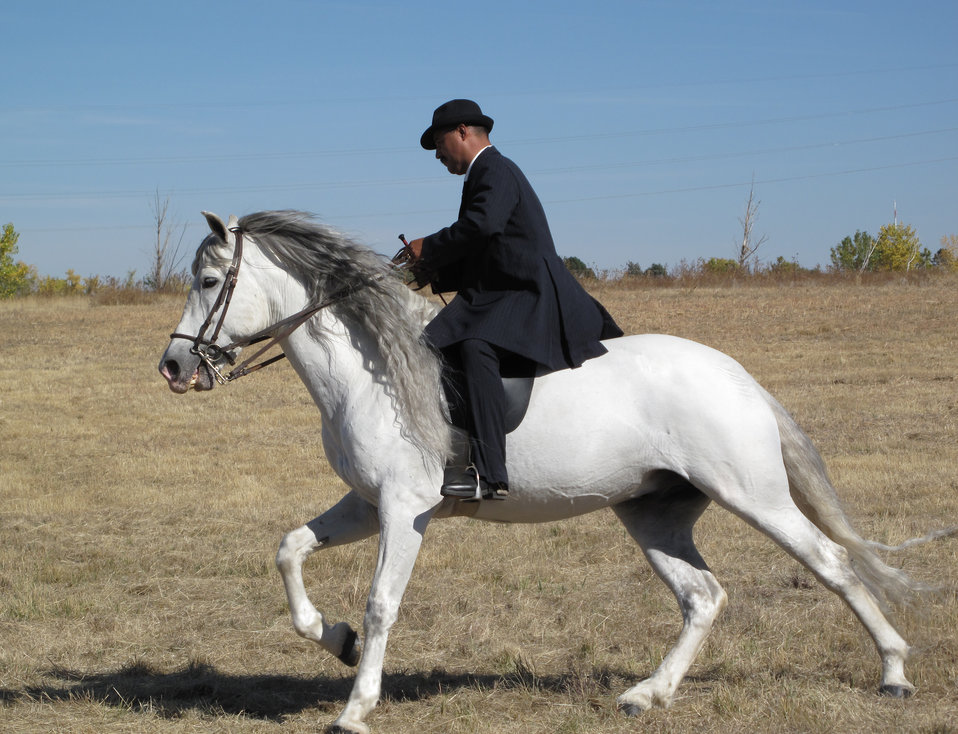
Refuge Round-up 2010

Jose and his dancing horses